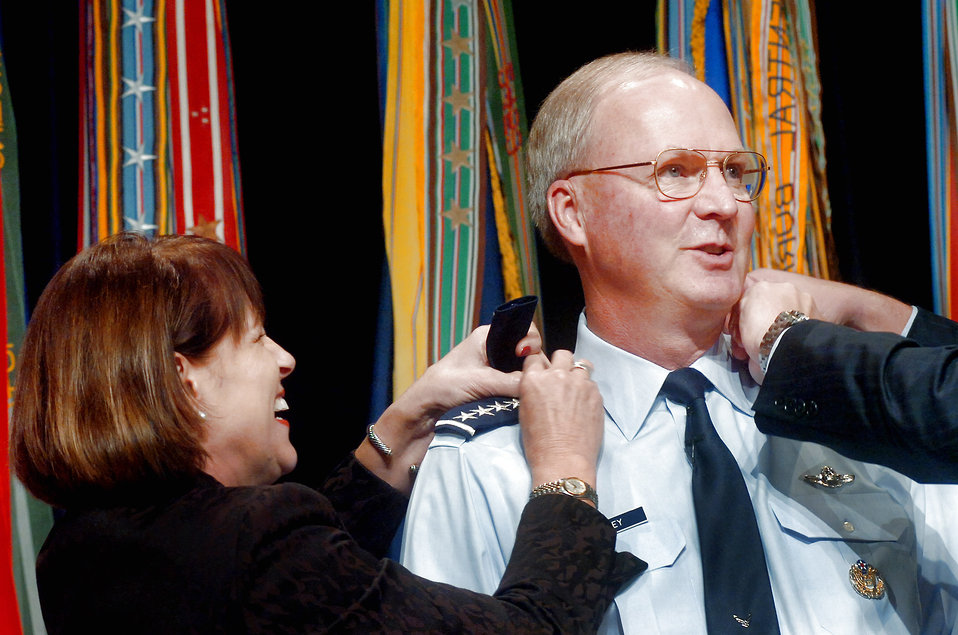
Guard's first 4-star general ready to take Minutemen forward

Gen. Craig R. McKinley has his new rank put on his uniform by his wife, Cheryl, and son, Patrick, during a Nov. 17 ceremony at the Pentagon. He was also sworn in as the 26th chief of the National Guard Bureau and is the first Guard officer to be promoted to the four-star rank.